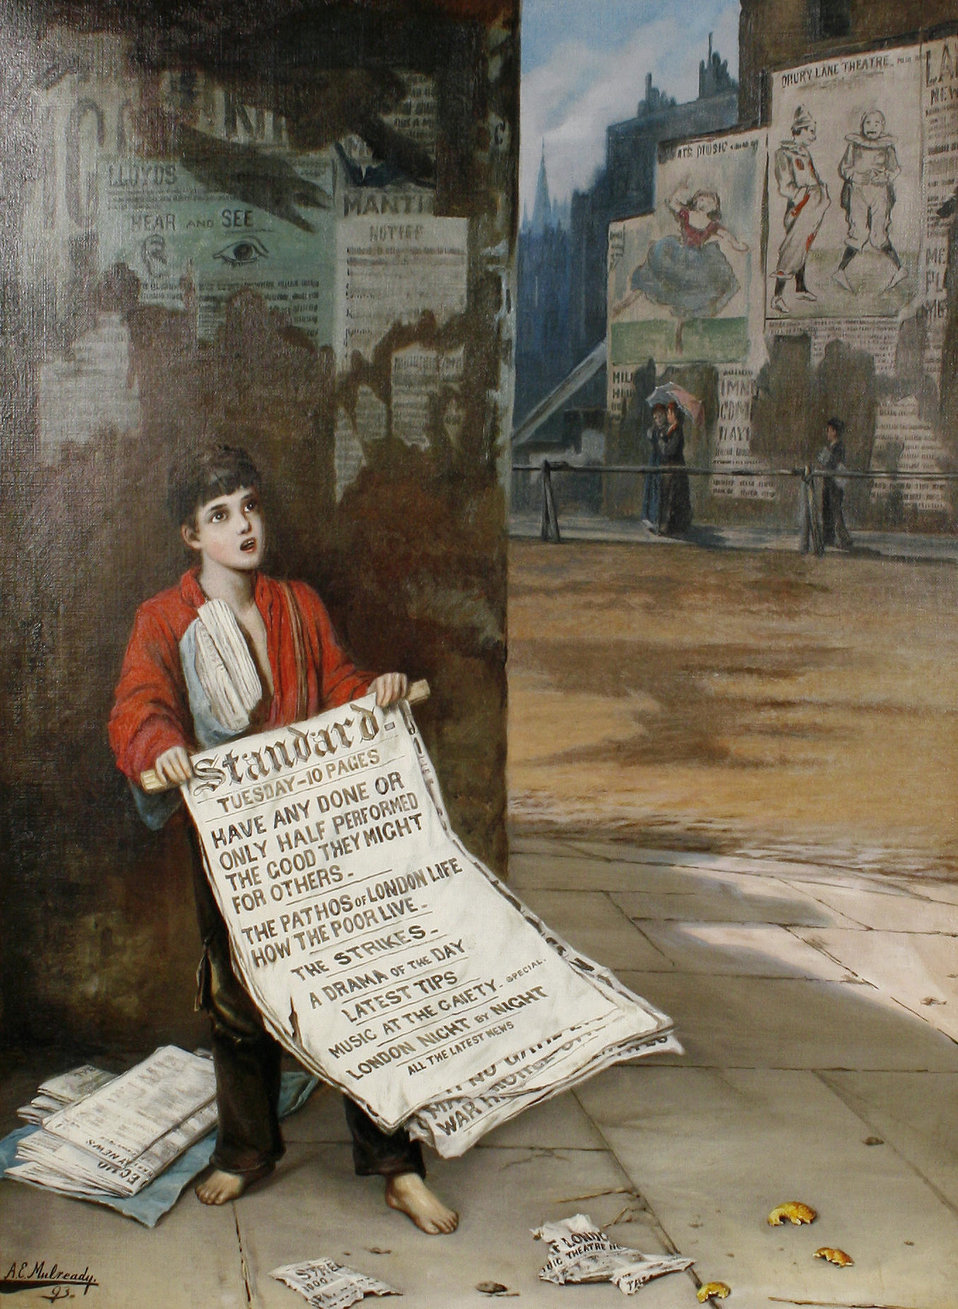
Augustus Edwin Mulready A London Newsboy 1893